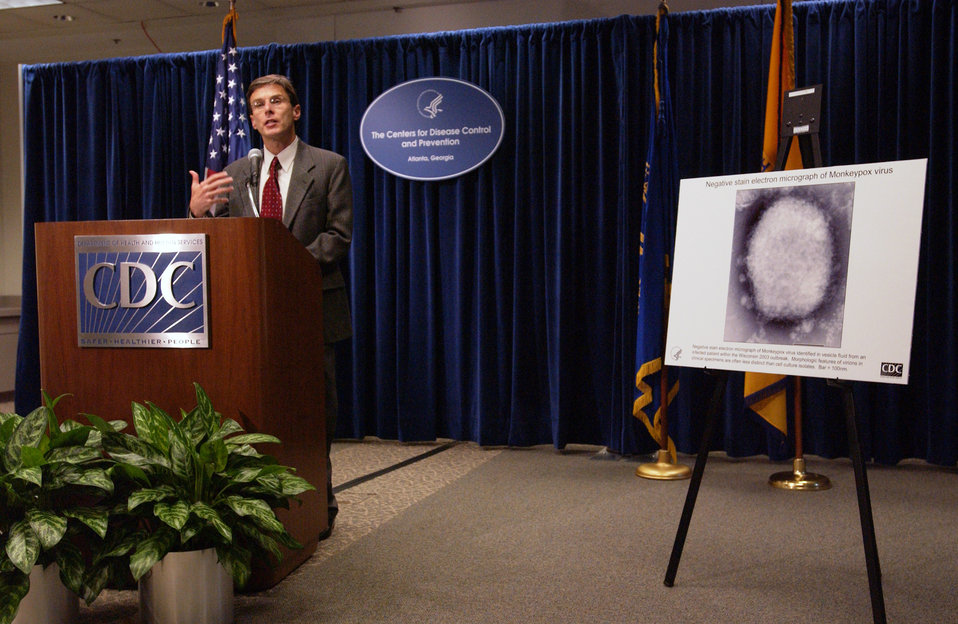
This was a Monkeypox Update press briefing presented by Dr. David Fleming, June 11, 2003.